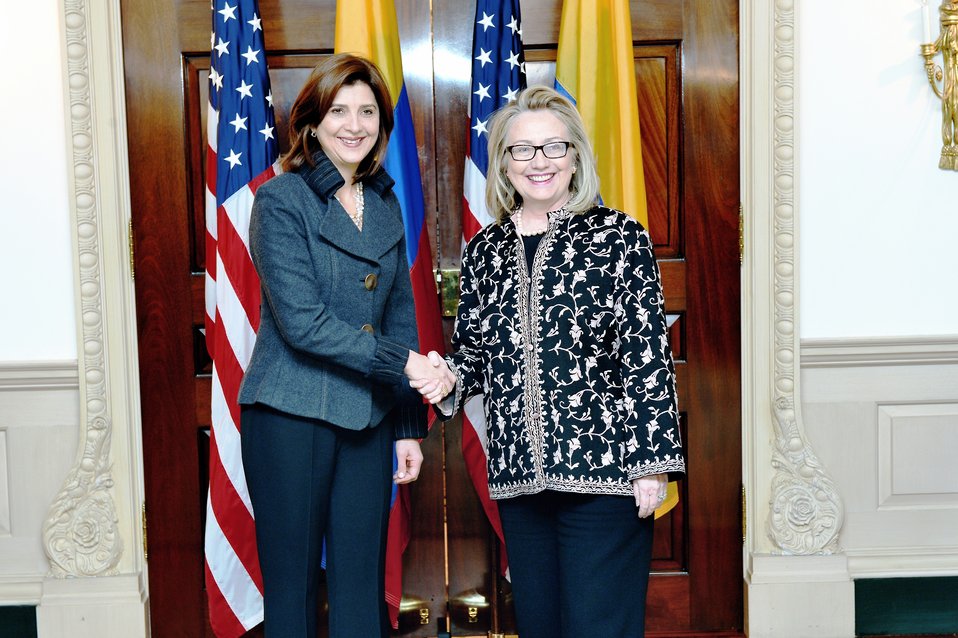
Secretary Clinton Meets With Colombian Foreign Minister Maria Angela Holguin Cuellar

U.S. Secretary of State Hillary Rodham Clinton meets with Colombian Foreign Minister Maria Angela Holguin Cuellar at the U.S. Department of State in Washington, D.C., January 15, 2013.